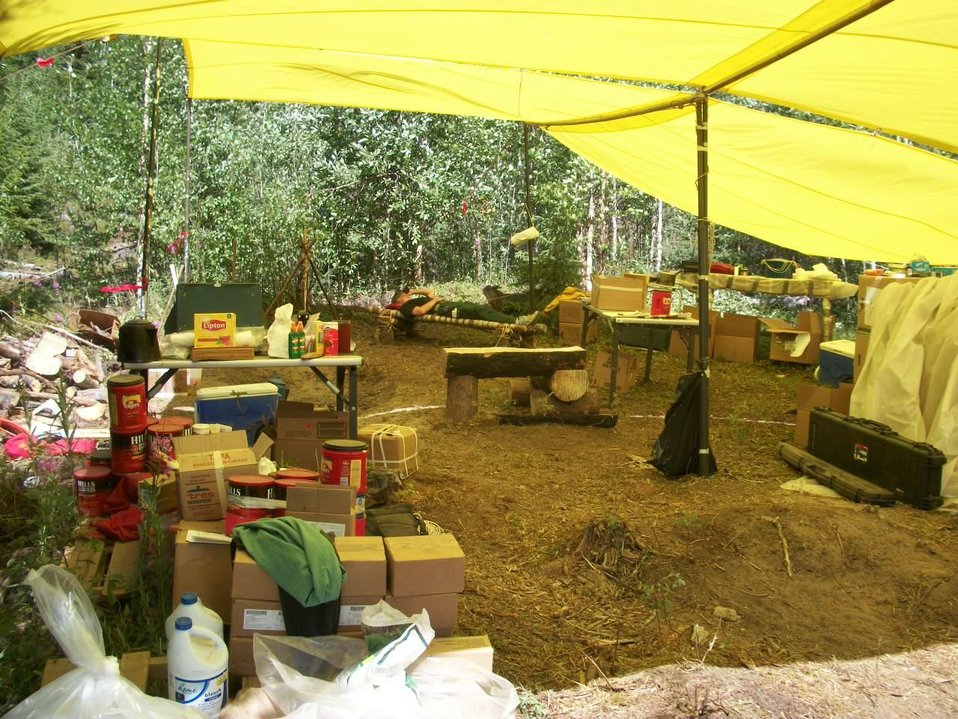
The Moon Complex Tetlin Fire Spike Camp provides a safe and secure area for fire crews to relax and recuperate. The Moon Lake Complex Fires consists of 2 fires, Moon Lake Fire and Tetlin Junction Ridge Fire, along the Alaska and Taylor Highways near Tok, AK. Lightning strikes on Jun. 25, 2013 caused the fires, which have consumed over 49, 959 acres.